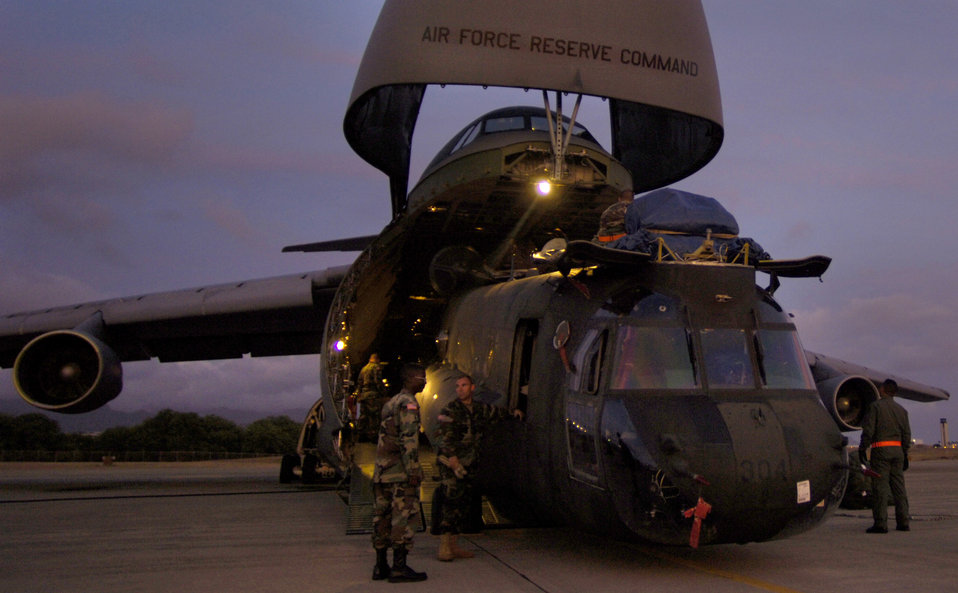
Pakistan relief efforts

HICKAM AIR FORCE BASE, Hawaii -- Airmen and Soldiers load a CH-47 Chinook heavy lift helicopter onto a C-5 Galaxy here. Company B, 214th Aviation Regiment of the 2nd Battalion, 25th Aviation Regiment at nearby Wheeler Army Air Field, received orders to deploy 60 troops, four helicopters and support equipment to Pakistan to support earthquake relief operations. A total force team here helped load the aircraft Oct. 16.